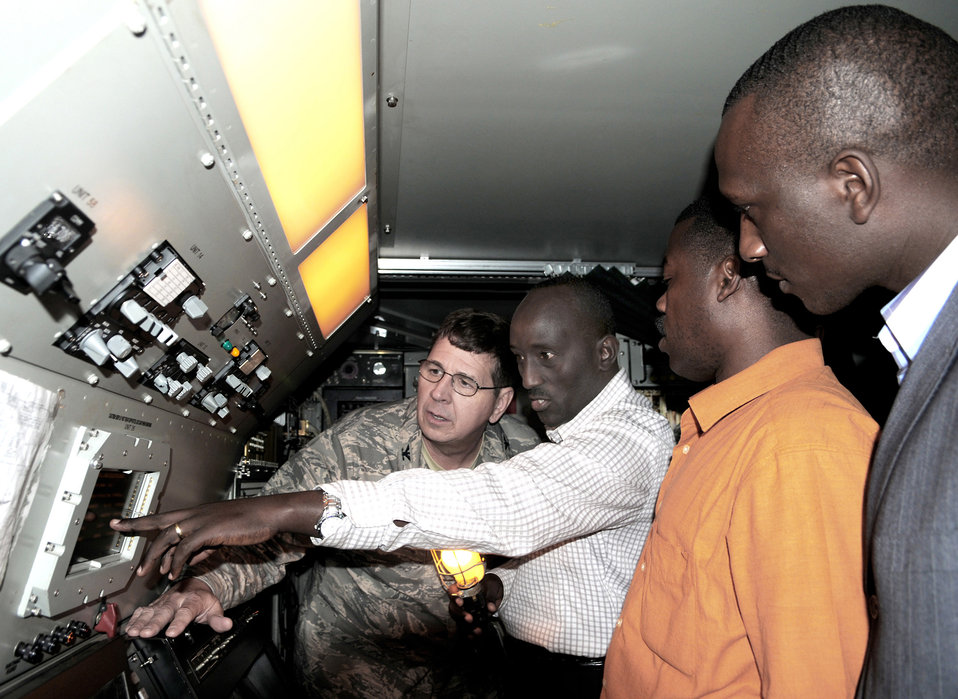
Airmen build on partnership in Rwanda

Engineer Eustache Karagire (center) explains the Aerospace Management System radar to Col. Robert McGrath from the 145th Airlift Wing at Charlotte, N.C., while 2nd Lt. Sylvester Manirambona (right from center) and Innocent Minega watch at Kilgali, Rwanda.